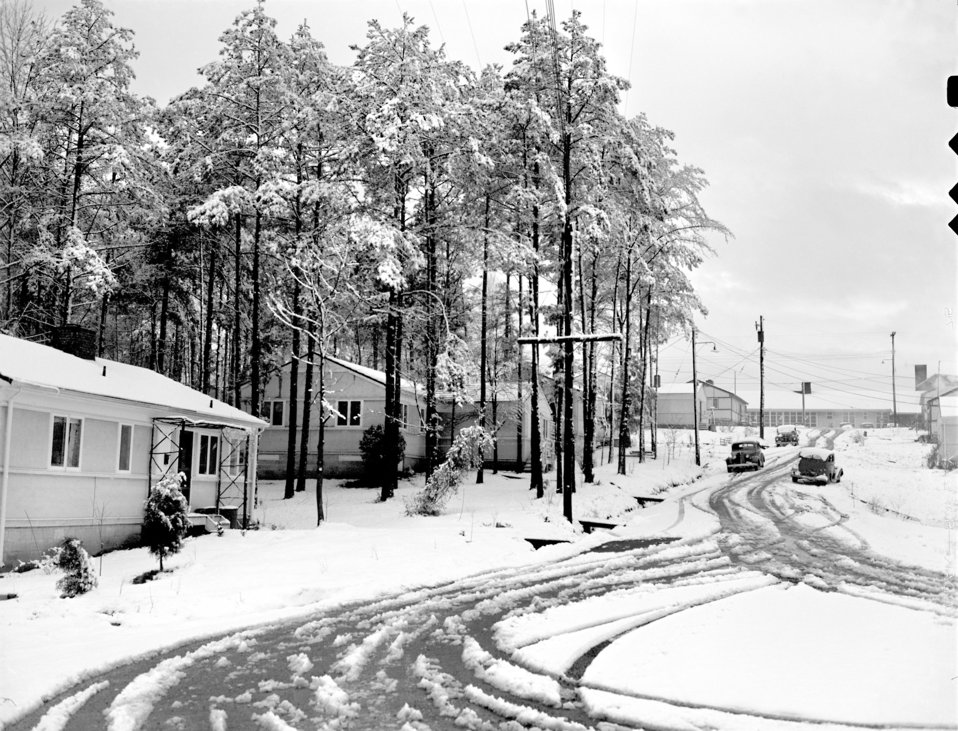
Snow Scenes Oak Ridge 1947

3306-16y DOE photo Ed Westcott 2-20-1947 Oak Ridge Tennessee